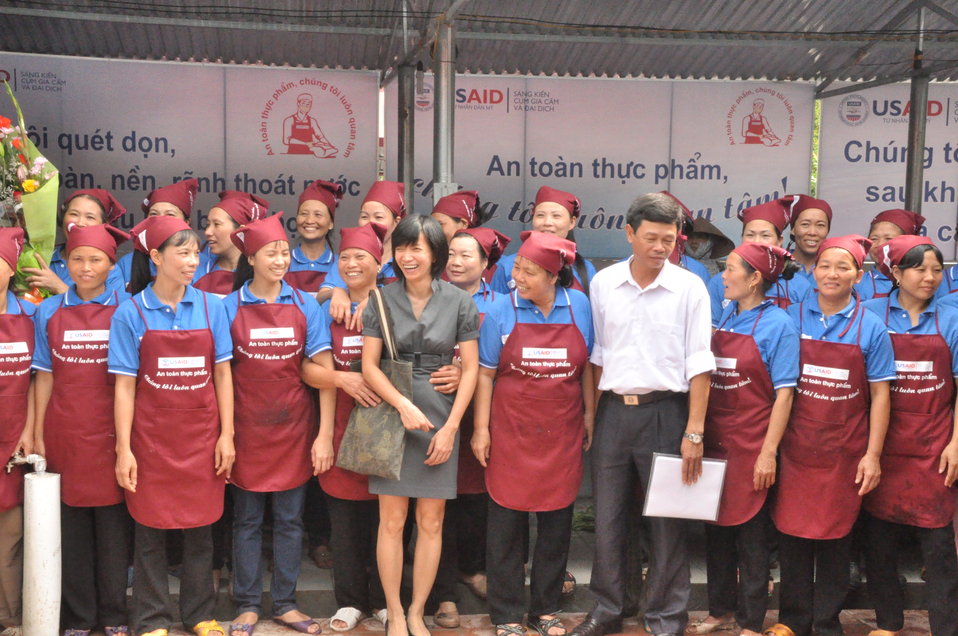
Handover Ceremony Hoa Mac Market Ha Nam

October 26, 2012